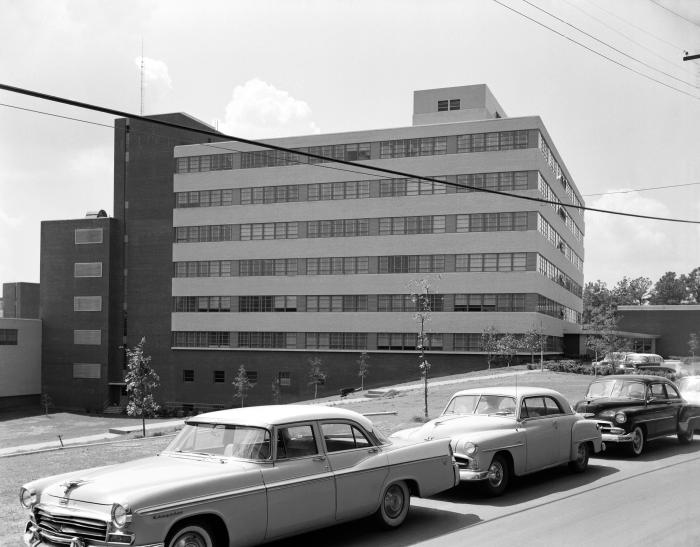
Looking westward, this historic 1960 view, depicts the front of what was once the main entrance to the Centers for Disease Control and Prevention (CDC), otherwise known as Building 1, located on Clifton Road, in Atlanta, Georgia.